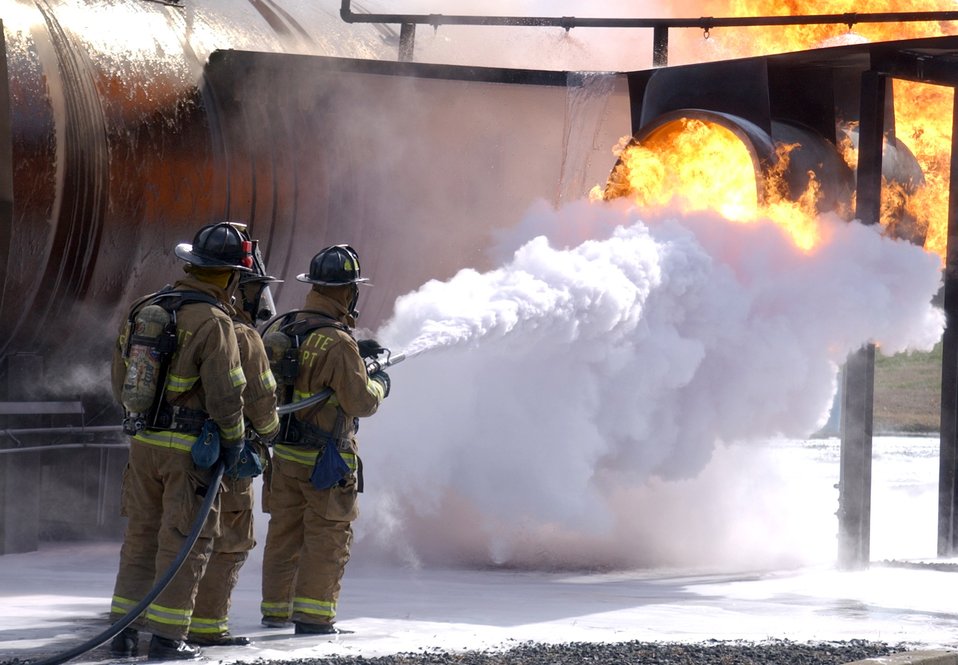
Feeling the heat

CHARLOTTE, N.C. (AFPN) -- Firefighters assigned from the 916th Air Force Reserve Fire Protection Flight fight a fire during an exercise on a mock fuselage. The 916th, assigned to nearby Seymour Johnson Air Force Base, is performing their annual recertification training.